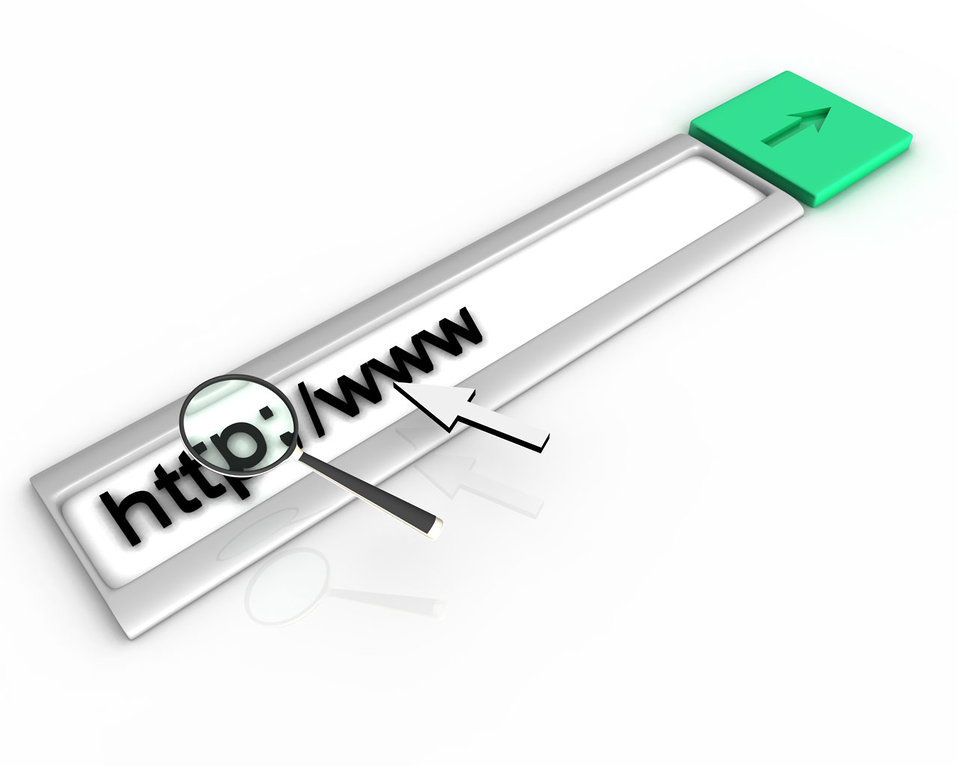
Magnifier http

3d magnifier with black handle and chrome and http.